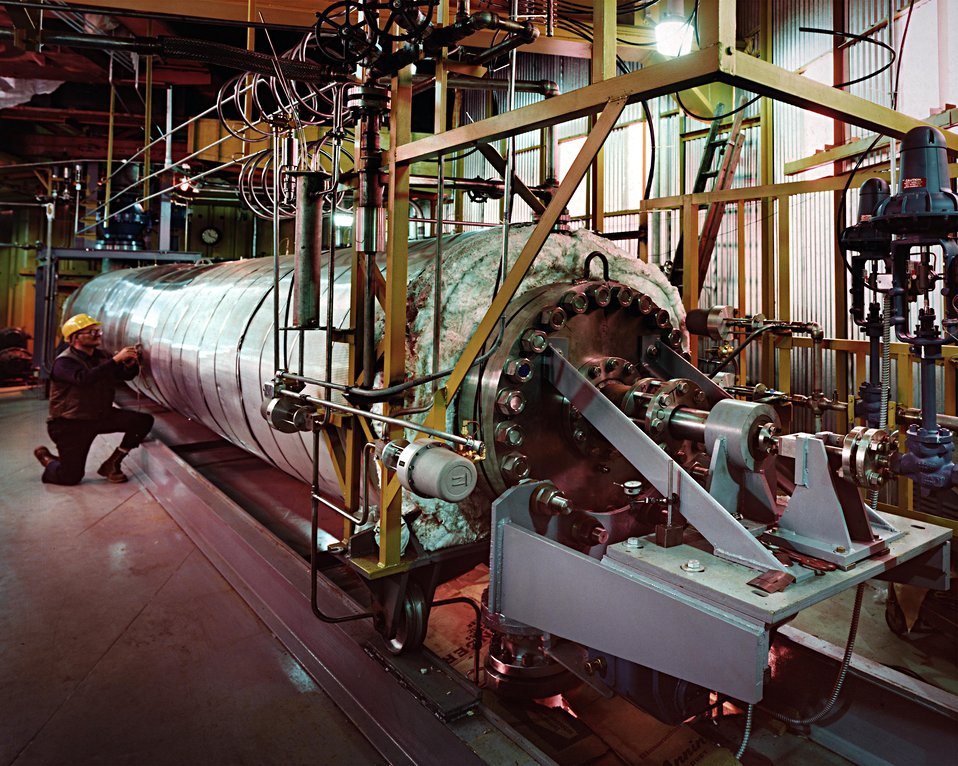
FULL VIEW OF THE AUGER KILN AT THE WRIGHT MALTA BIOMASS GASIFICATION PDU.

RESEARCHERS WILL ASSESS THE FEASIBILITY OF GASIFYING BIOMASS TO PRODUCE FUEL IN A SMALL, CRITICAL PRESSURE, LOW TEMPERATURE, WATER/STEAM GASIFIER. IN THE GASIFIER, BIOMASS (WOOD,PLANT OR ANIMAL WASTES, ETC.) IS MIXED WITH STEAM AND OXYGEN AT HIGH TEMPERATURES AND PRESSURES TO PRODUCE GAS, LIQUID FUELS AND/OR FUEL OIL. A LOW COST SYSTEM WAS PROPOSED, DIFFERENT TYPES OF BIOMASS WERE STUDIED, MODELS WERE ESTABLISHED, AND A THREE DRY TONS PER-DAY PROCESS DEVELOPMENT UNIT WAS DESIGNED. IN ADDITION, AN ECONOMIC ASSESSMENT WAS MADE CONCERNING THE MEDIUM BTU GAS END PRODUCT. THE TECHNICIAN IS ATTACHING A REFLECTIVE SHIELD OVER THE FIBROUS THERMAL INSULATION. NOTE GAS OUTLET AND STEAM GAS INLET PIPING FOR AUGER AND KILN BARREL HEATING. WOOD ASH RESIDUE DISCHARGE VALVE IS IN BOTTOM FOREGROUND.